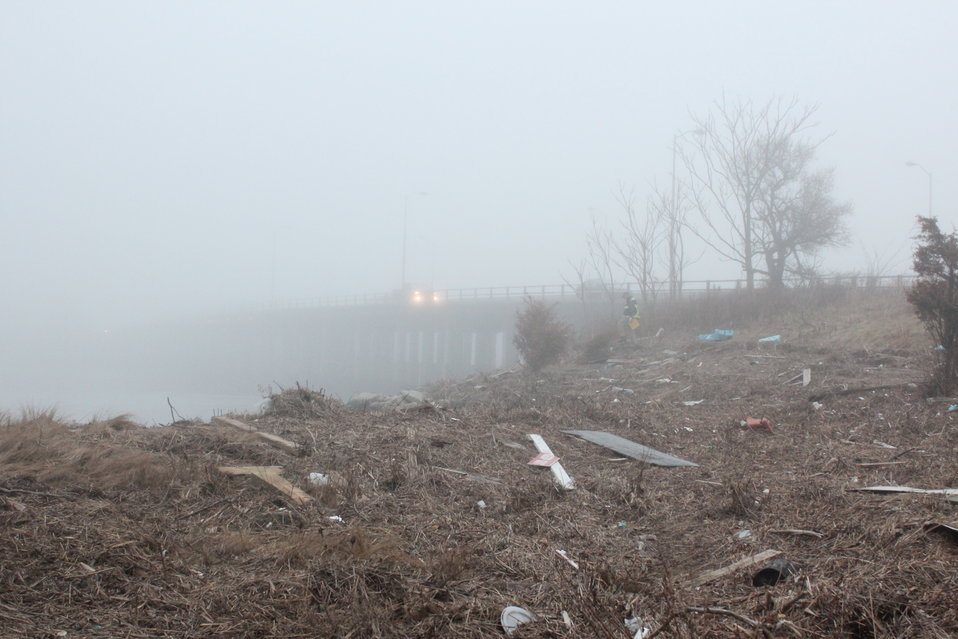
December 4, 2012 Fog changes plans, brings eeriness

While it complicated boat operations, the thick fog did not stop crews from working in areas that were accessible by road.

Searching for hazardous items in these conditions left an even more dramatic impression of Sandy's aftermath. As the fog closed us in, other distractions ordinarily in the background vanished. There was a somber stillness in the air as we waded through the debris filled shoreline.